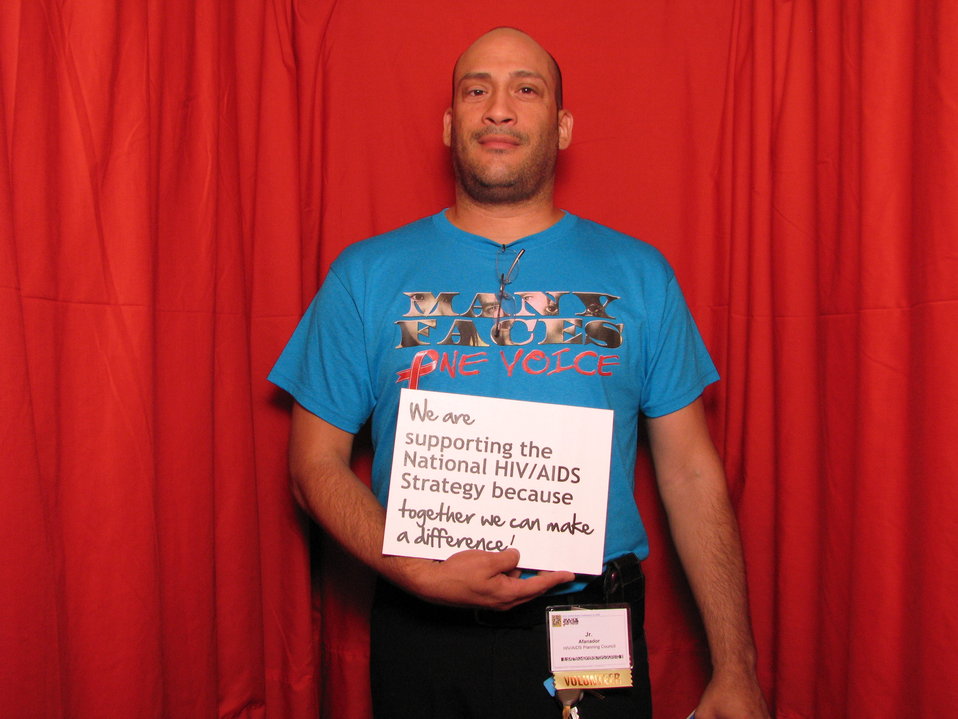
We are supporting the National HIV/AIDS Strategy because together we can make a difference.

From the AIDS.gov photo booth at the U.S. Conference on AIDS, September 2010 (Orlando, FL).